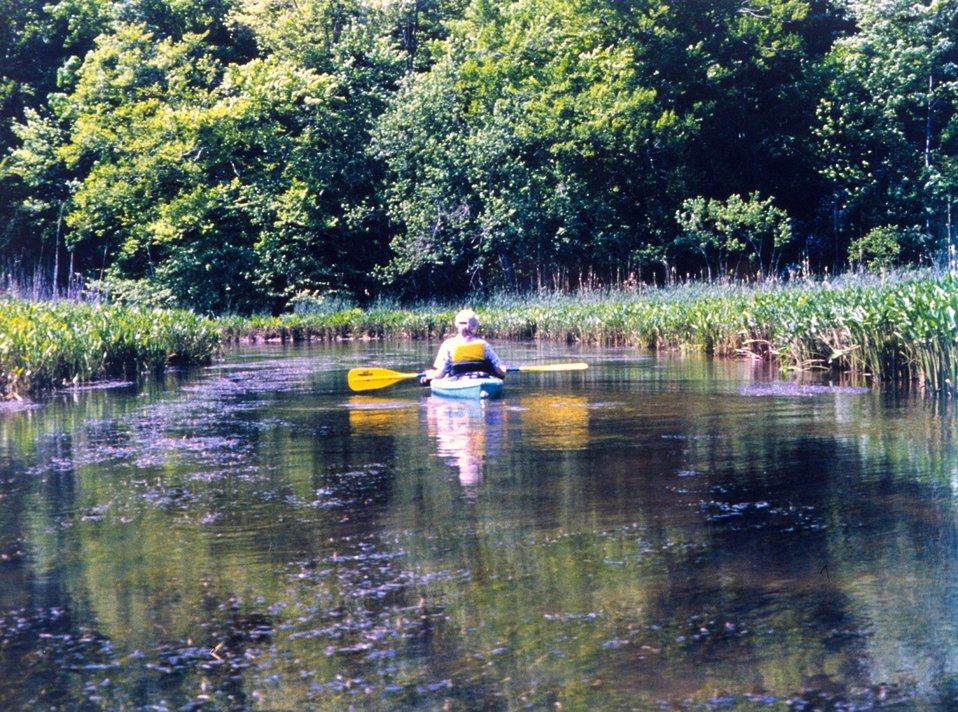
Paddling in Black Swamp Creek.